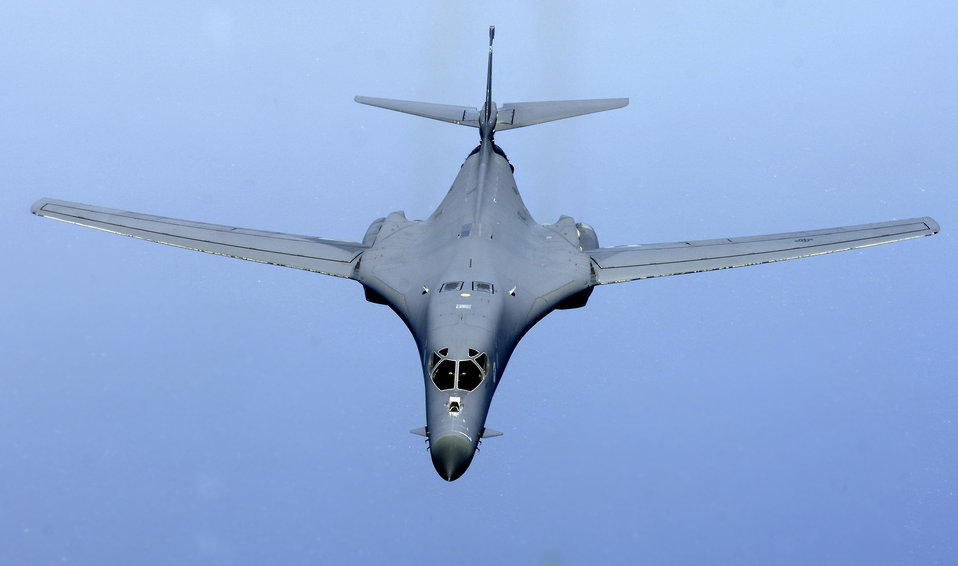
Supporting OEF

A B-1 Lancer prepares to connect with a KC-135 Stratotanker refueling boom over the Indian Ocean on July 7. The B-1 was flying a close-air-support mission in support of Operation Enduring Freedom.